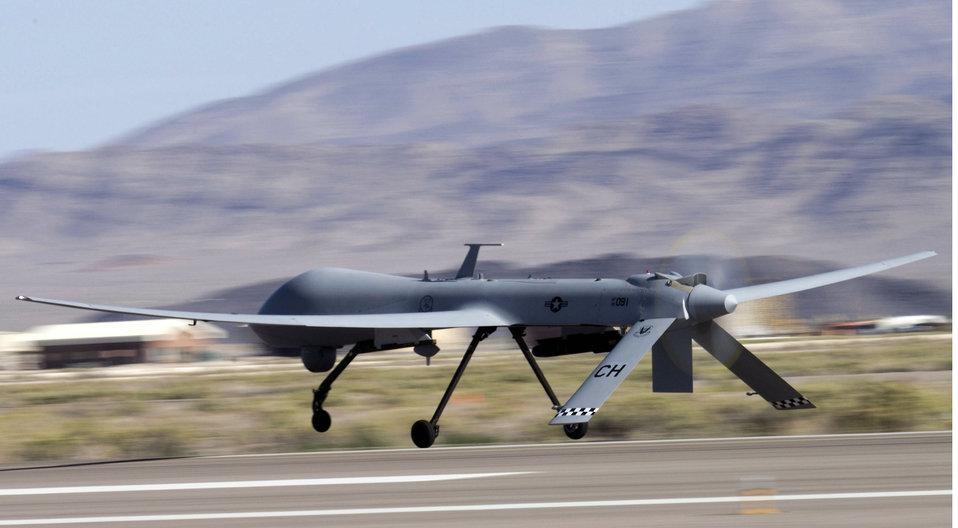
Predator passes 700,000 flight hours

An MQ-1 Predator remotely piloted aircraft takes off from Creech Air Force Base, Nev., for a training mission.